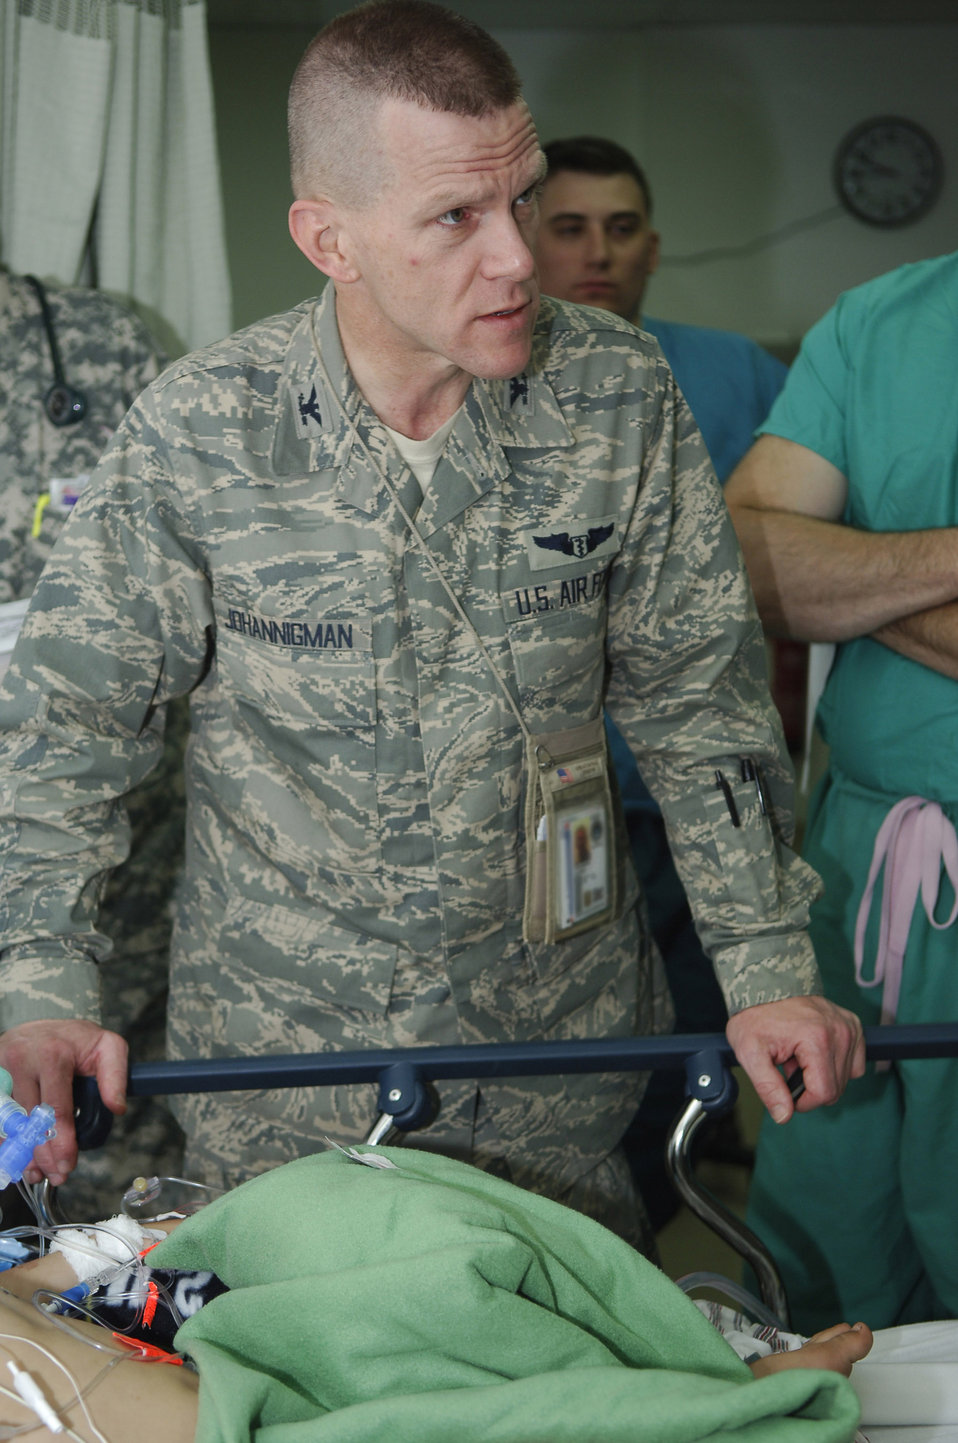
Balad trauma doctors gather to hone skills

Col. (Dr.) Jay Johannigman listens to a doctor reporting the status of a pediatric gunshot wound victim at Balad Air Base, Iraq, during rounds in the intensive care unit at the Air Force Theater Hospital March 27. As the trauma czar, Colonel Johannigman is responsible for the care of all patients in the intensive care unit and intensive care ward. Colonel Johannigman is assigned to the 332nd Expeditionary Medical Operations Squadron and deployed from Blue Ash Air National Guard Station, Ohio.